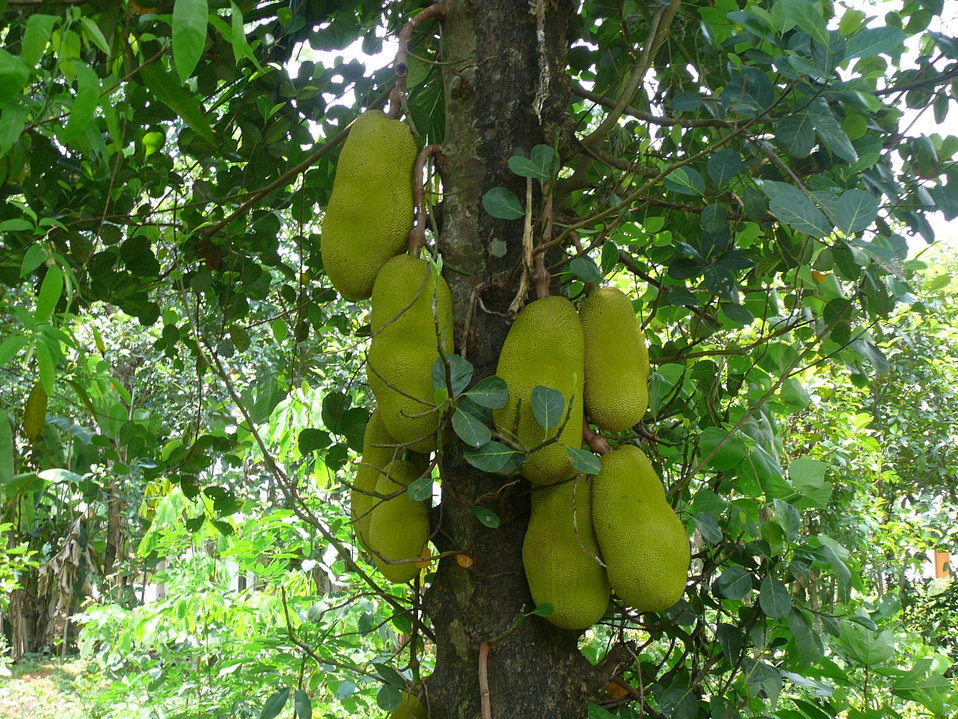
A jackfruit tree in the Indian state of Kerala.